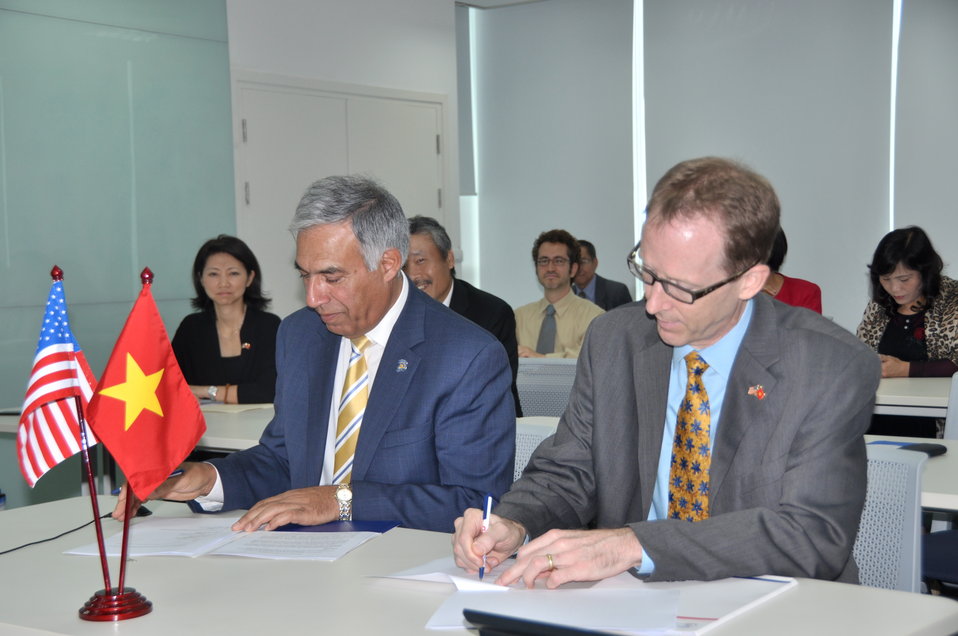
USAID Mission Director Joakim Parker and San Jose State University President Dr. Mohammed Qayoumi sign the Memorandum of Understanding.

Hanoi, November 13, 2013.